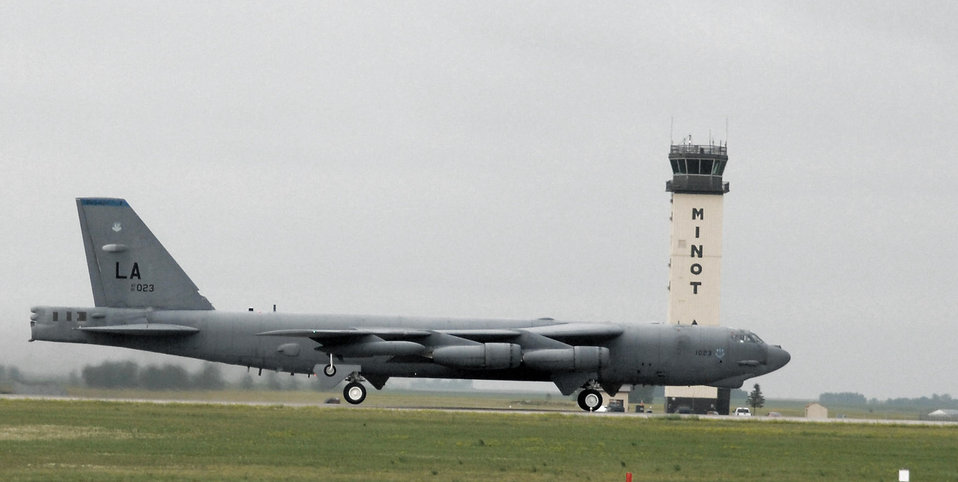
B-52H reaches retirement

A B-52H Stratofortress from the 2nd Bomb Wing at Barksdale Air Force Base, La., takes off from Minot AFB, N.D., July 24 on its final flight to Davis-Monthan AFB, Ariz. This is the first B-52H to be retired after more than 45 years of dedicated service to the United States and the Air Force.